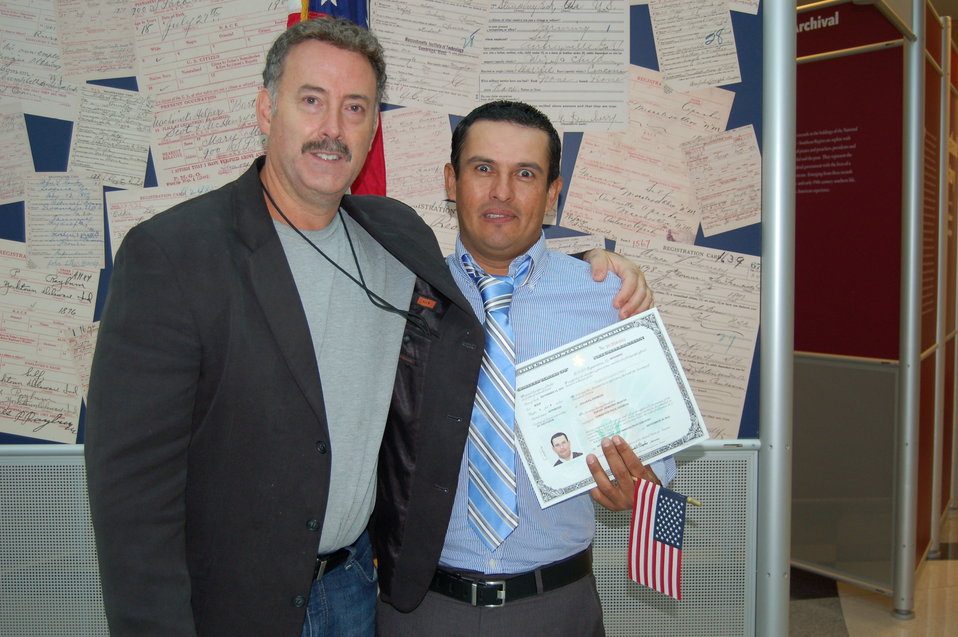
New Citizens